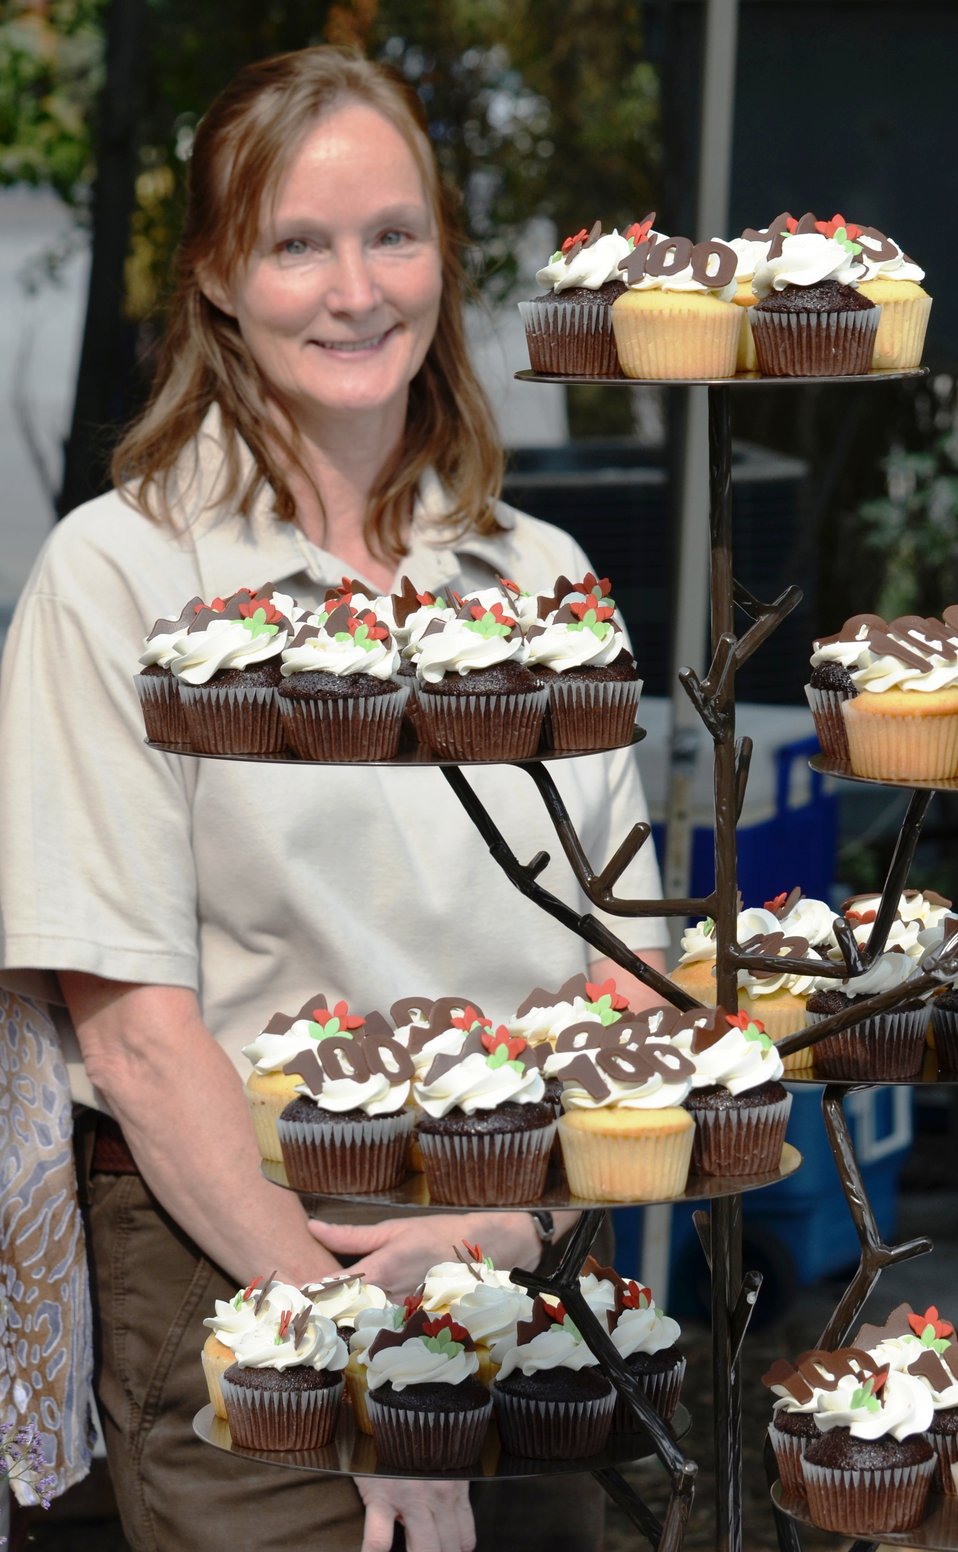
Cupcakes Are Easier to Serve

Though it was a birthday cake that was brought into the National Elk Refuge's centennial ceremony on August 10, guests to the event were served decorated cupcakes after the ceremony was over. Both the cake and cupcakes were created by Jackson Cake Company. National Elk Refuge Administrative Assistant Elizabeth Schooner helped serve the treats.

Credit: USFWS / Bobby Harkey, National Elk Refuge volunteer